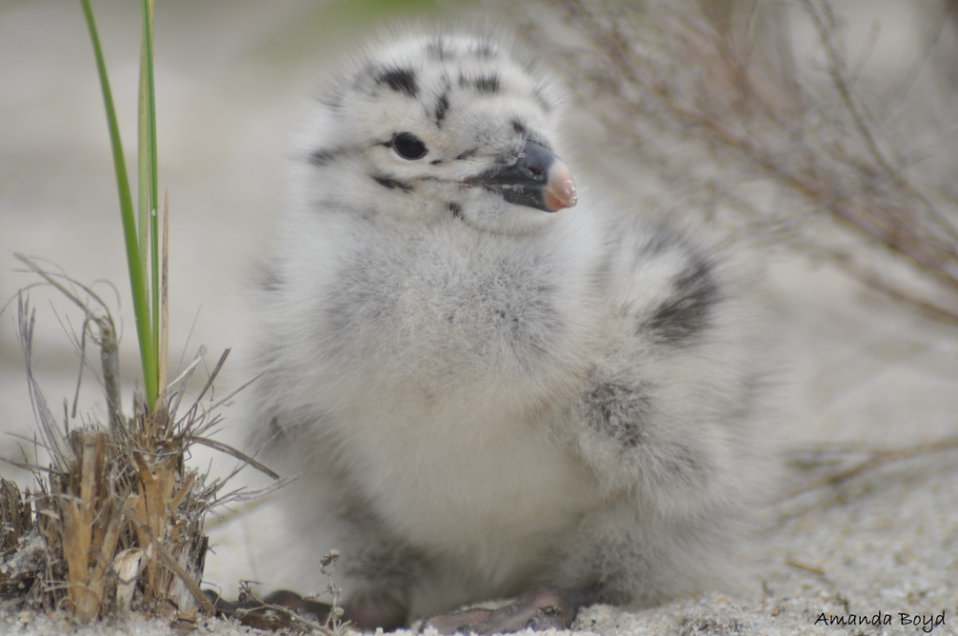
great black-backed gull chick

Nantucket National Wildlife Refuge